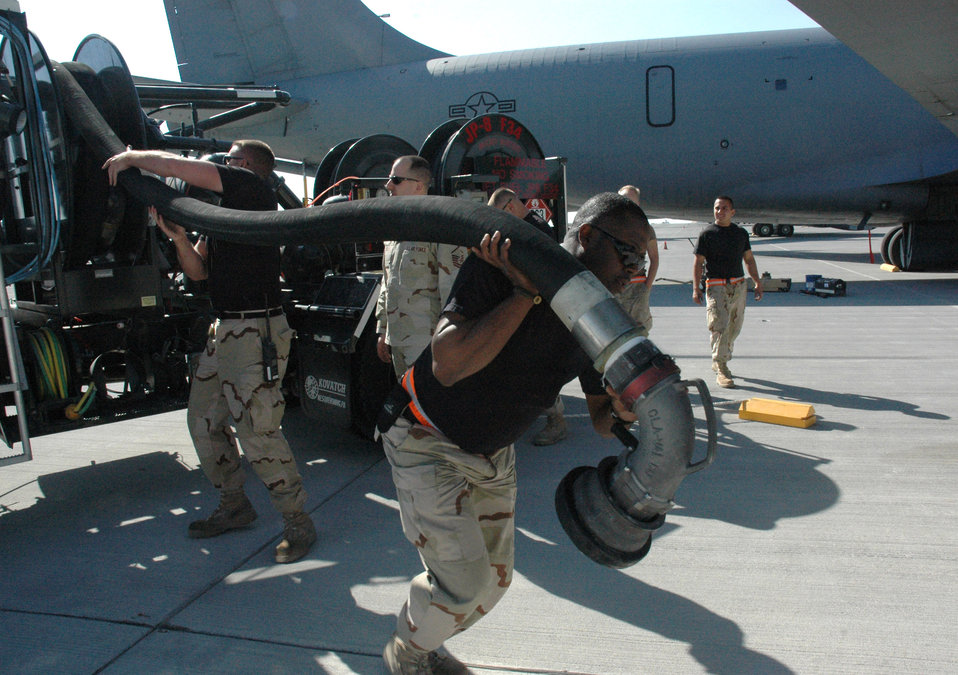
Hydrant vehicle refuels Air Force fleet faster

Airmen from the 379th Expeditionary Logistics Readiness Squadron fuels flight at a base in Southwest Asia pull a 30-foot hydrant hose from a new hydrant servicing vehicle Feb. 23. The squadron recently received three of the HSVs which will significantly increase refueling capabilities.